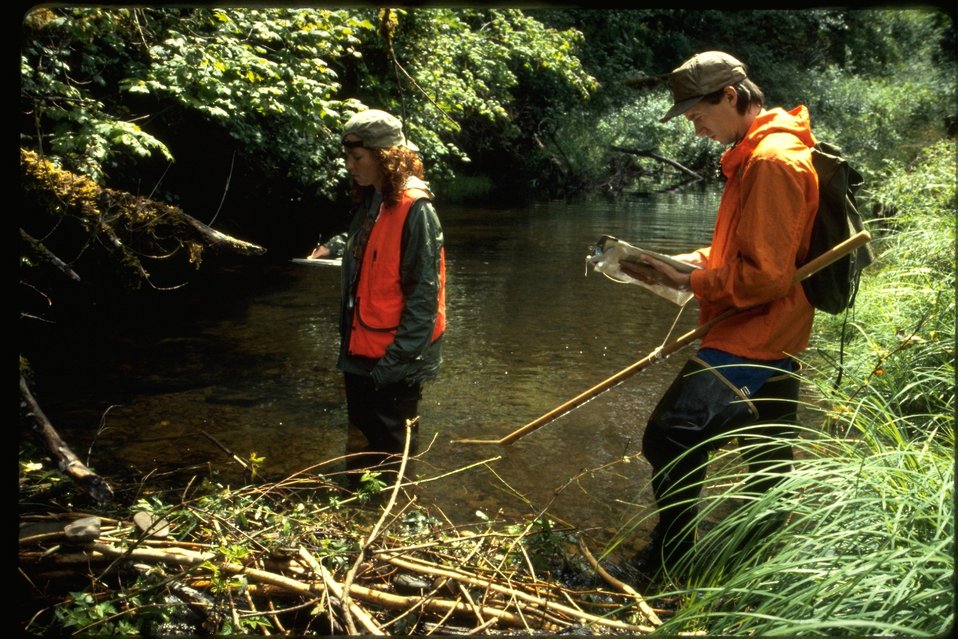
Sarah and Russ surveying Smith Creek during habitat study.